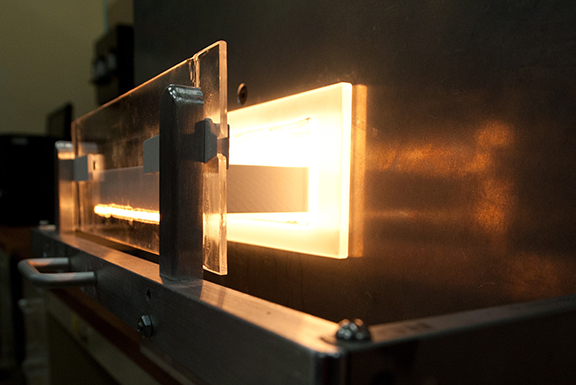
Optical cavity furnace developed by the U.S. Department of Energy's National Renewable Energy Laboratory.
The cavity inside the Solar Optical Furnace glows white hot during a simulated firing of a solar cell.